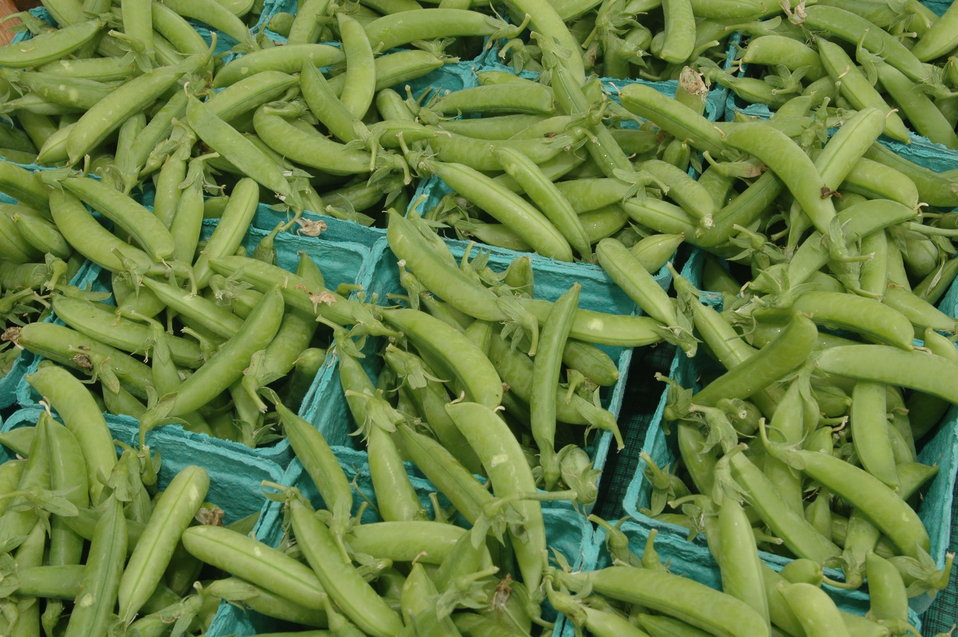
Green beans for sale at the U.S. Department of Agriculture (USDA) Farmer’s Market held in the East parking lot of USDA's Whitten Building in Washington, D.C. on June 2, 2006.